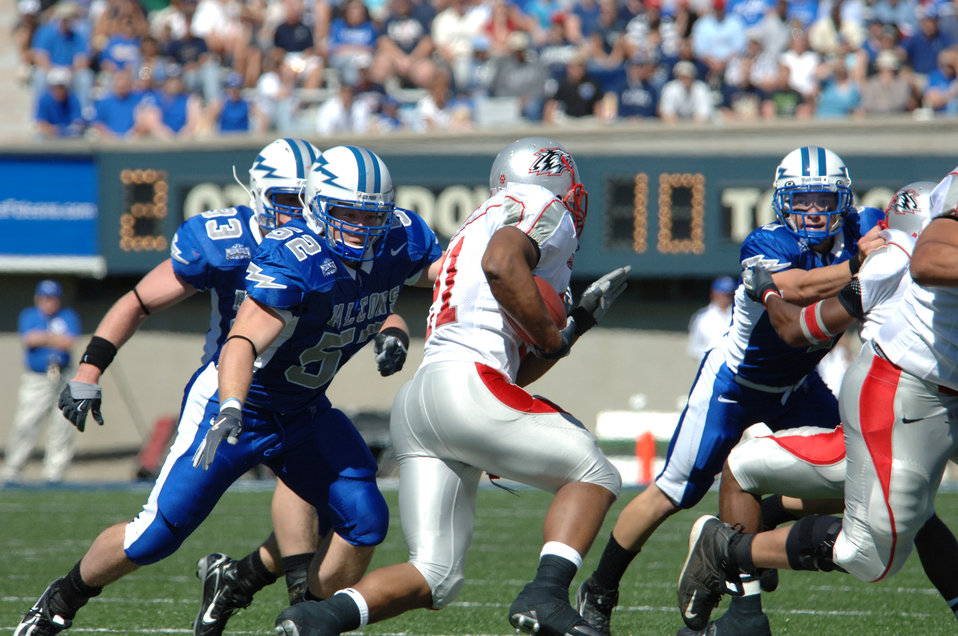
Air Force beats New Mexico 24-7

Falcons linebacker Austin Randle, #52, runs down New Mexico tailback Rodney Ferguson Sept. 30. The Falcons' defense held New Mexico to 41 yards rushing. Air Force went on to defeat the Lobos 24-7.